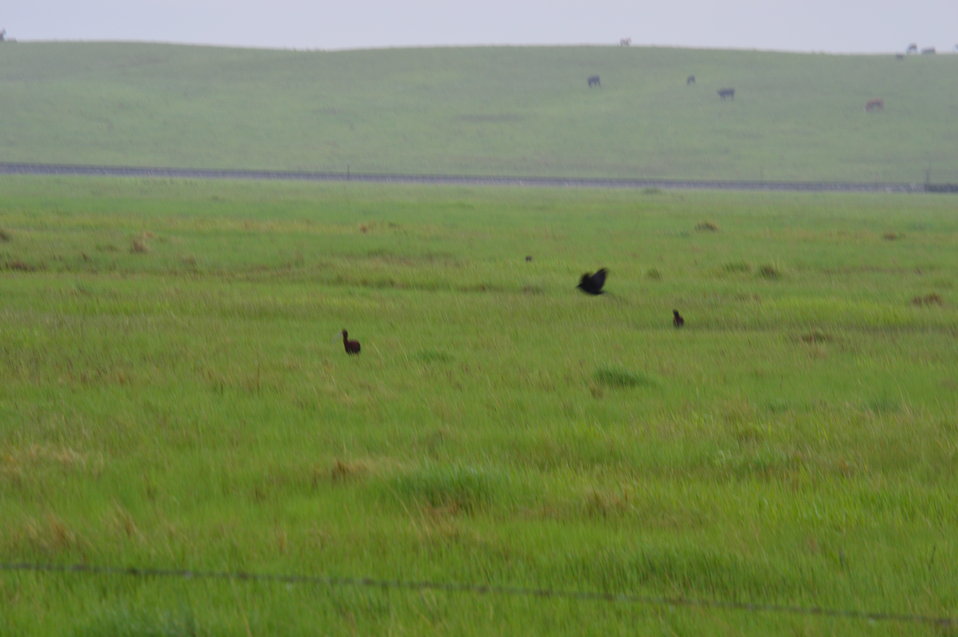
Prairie of Lost Lake NWR

Scenery and wildlife at Lost Lake National Wildlife Refuge in North Dakota.